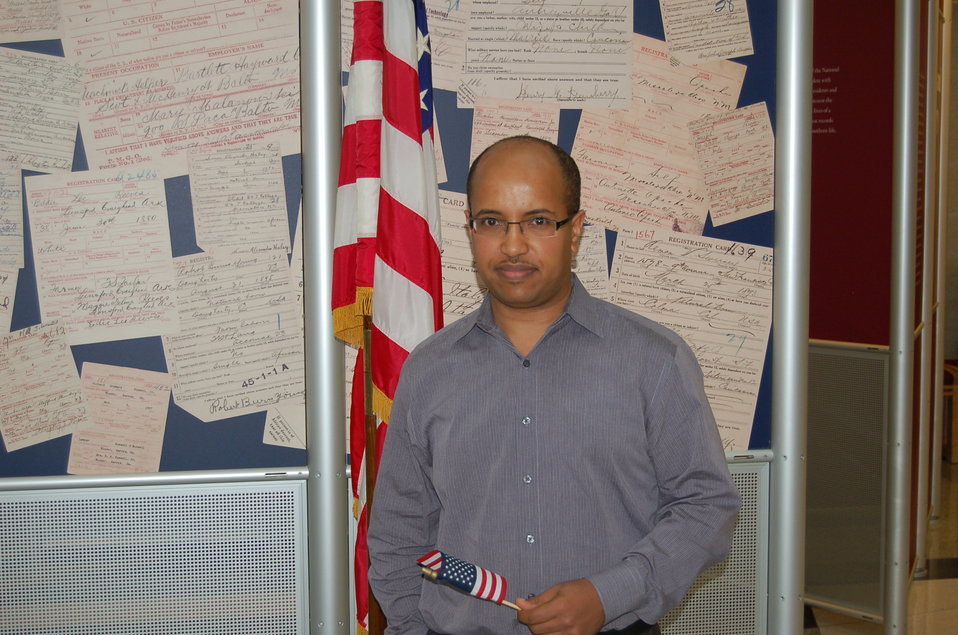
New Citizens